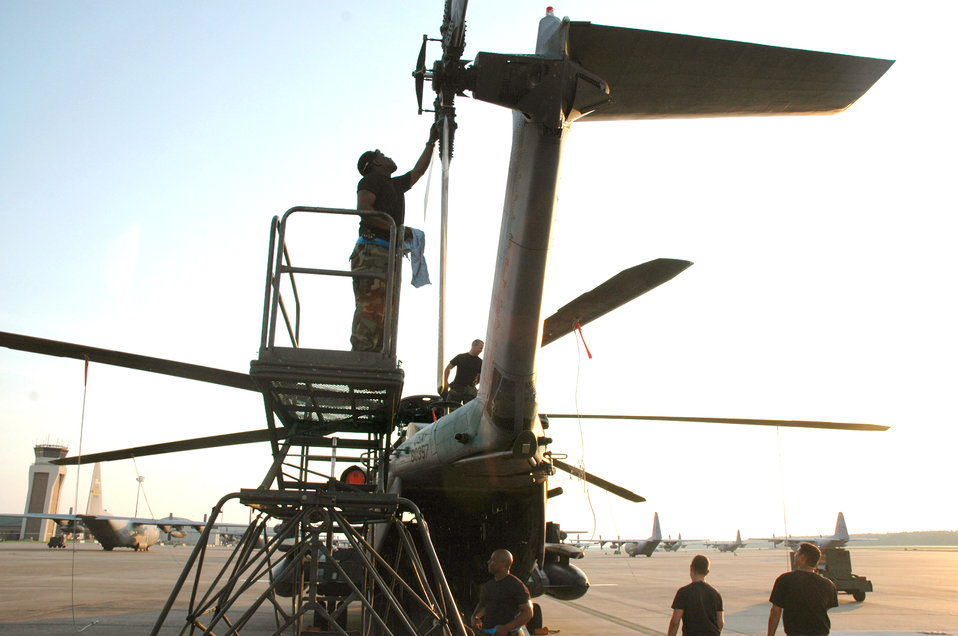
Arkansas 'paves' way for visitors

LITTLE ROCK AIR FORCE BASE, Ark. -- Tech. Sgt. Cedric Herron maintains an MH-53M Pave Low helicopter. Several aircraft from Hurlburt Field, Fla., were diverted here after an evacuation for Hurricane Dennis on July 8. Sergeant Herron is assigned to the 16th Helicopter Maintenance Squadron at Hurlburt.